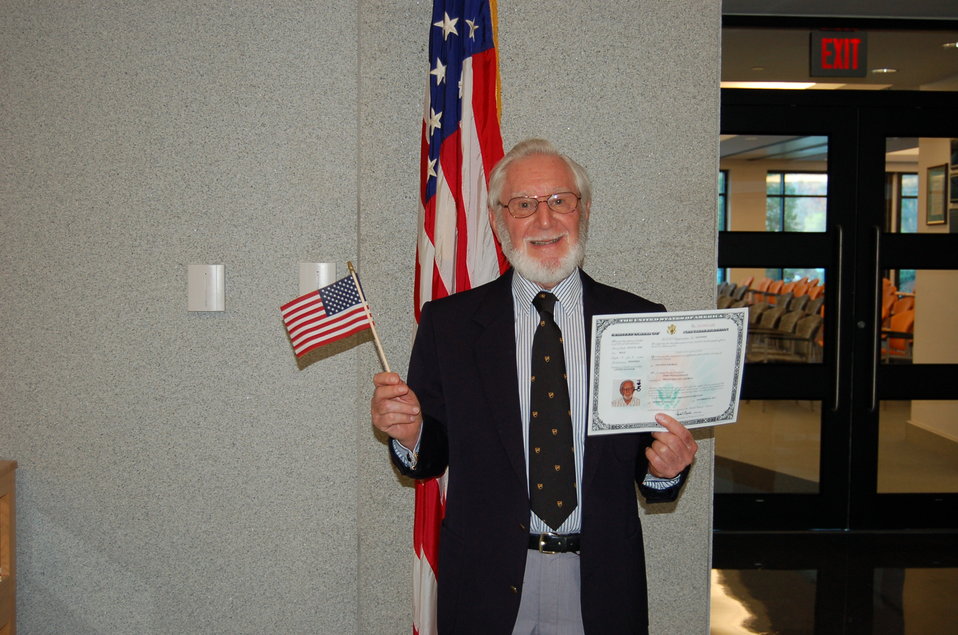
New Citizens